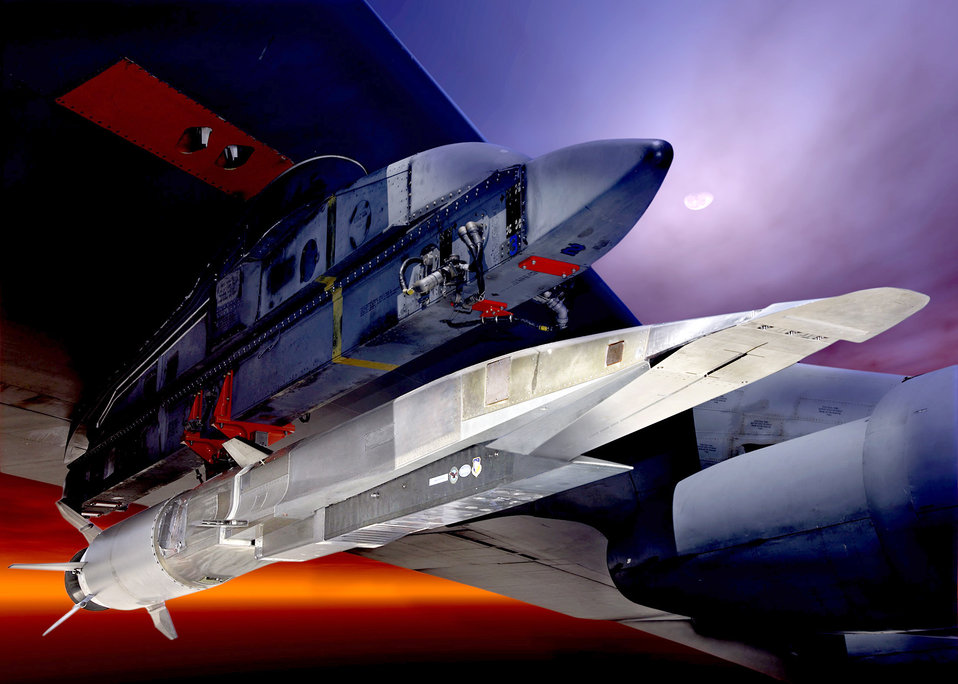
X-51A Waverider

The X-51A Waverider, shown here under the wing of a B-52 Stratofortress, is set to demonstrate hypersonic flight. Powered by a Pratt & Whitney Rocketdyne SJY61 scramjet engine, it is designed to ride on its own shockwave and accelerate to about Mach 6.